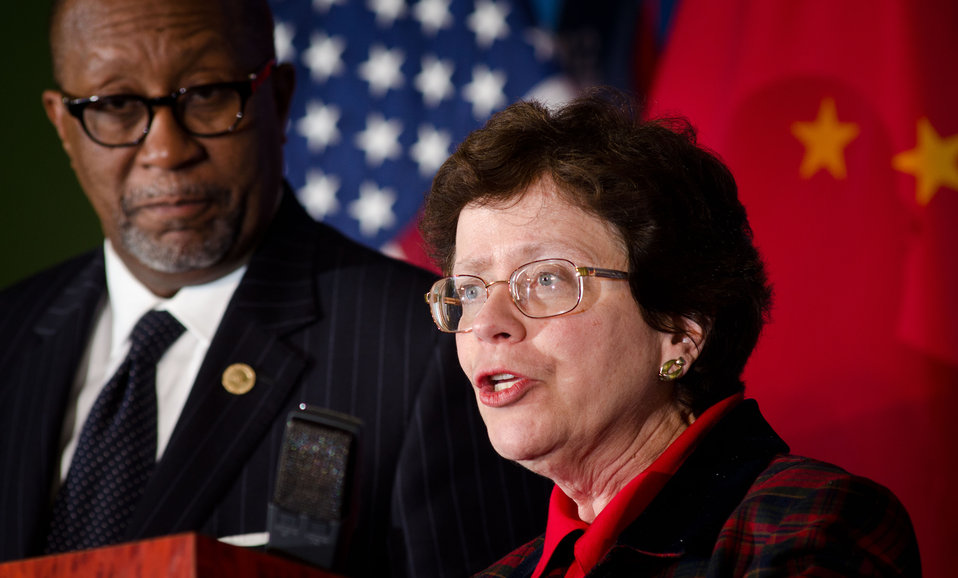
U.S. Trade Representative Ron Kirk listens to Acting U. S. Commerce Secretary Rebecca Blank respond to a question from an international news media journalist at the 23rd Session of the U.S. China Joint Commission on Commerce and Trade (JCCT) at the Andrew W. Mellon Auditorium in Washington, D.C. on Wednesday, Dec. 19, 2012. The JCCT holds high-level plenary meetings on an annual basis to review progress made by working groups that focus on a wide variety of trade issues. These working groups meet throughout the year to address topics such as intellectual property rights, agriculture, pharmaceuticals and medical devices, information technology, tourism, commercial law, environment, and statistics.